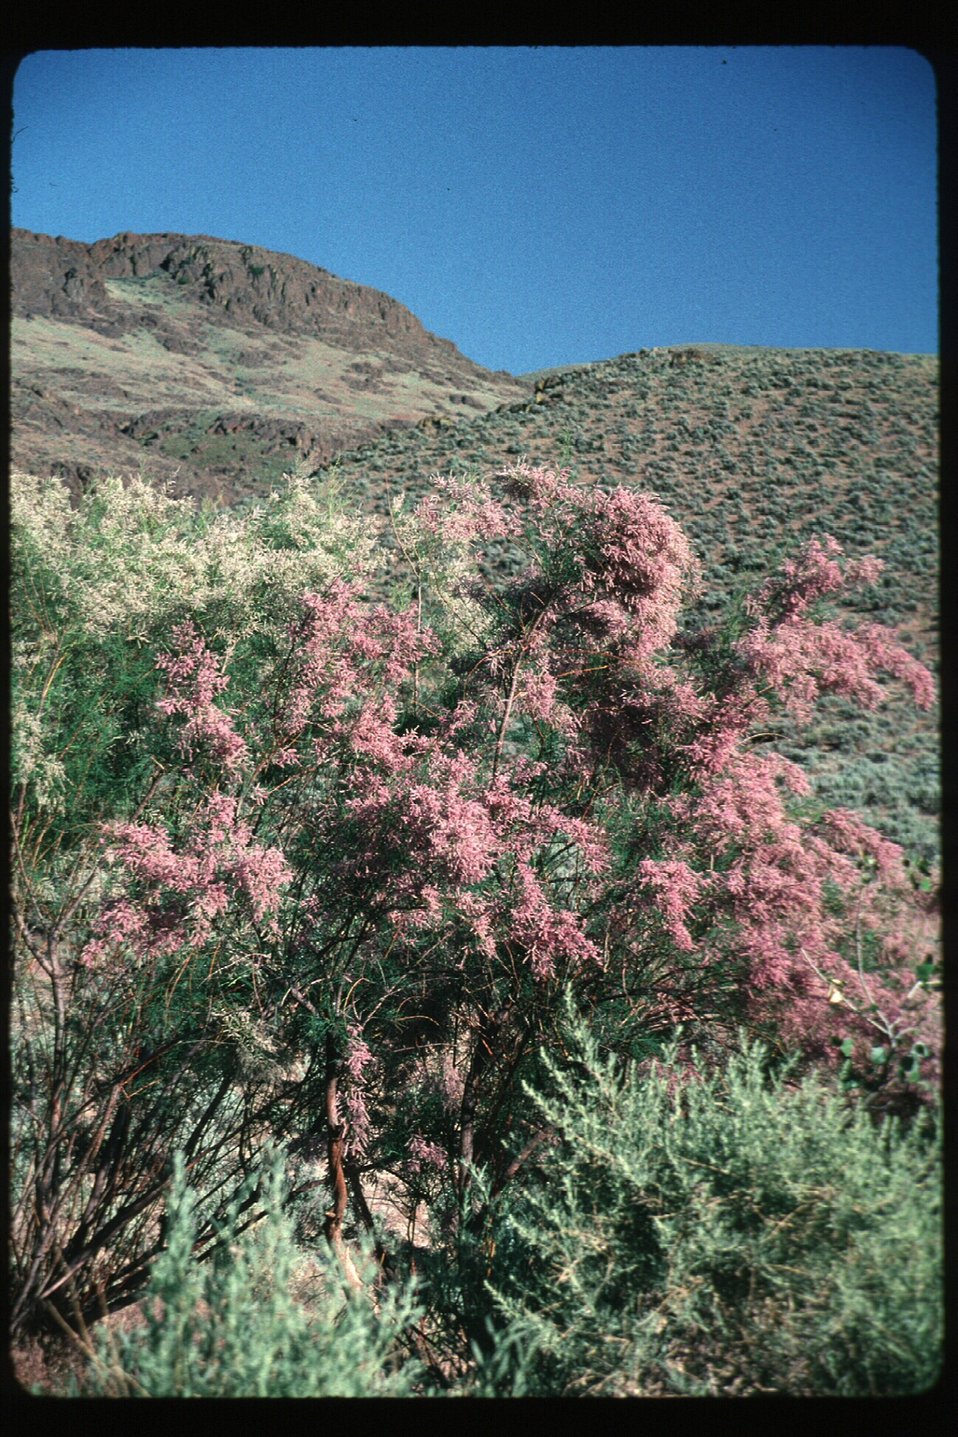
Salt Cedar Brush Rangeland Four Rivers Field Office LSRD Lower Snake River District